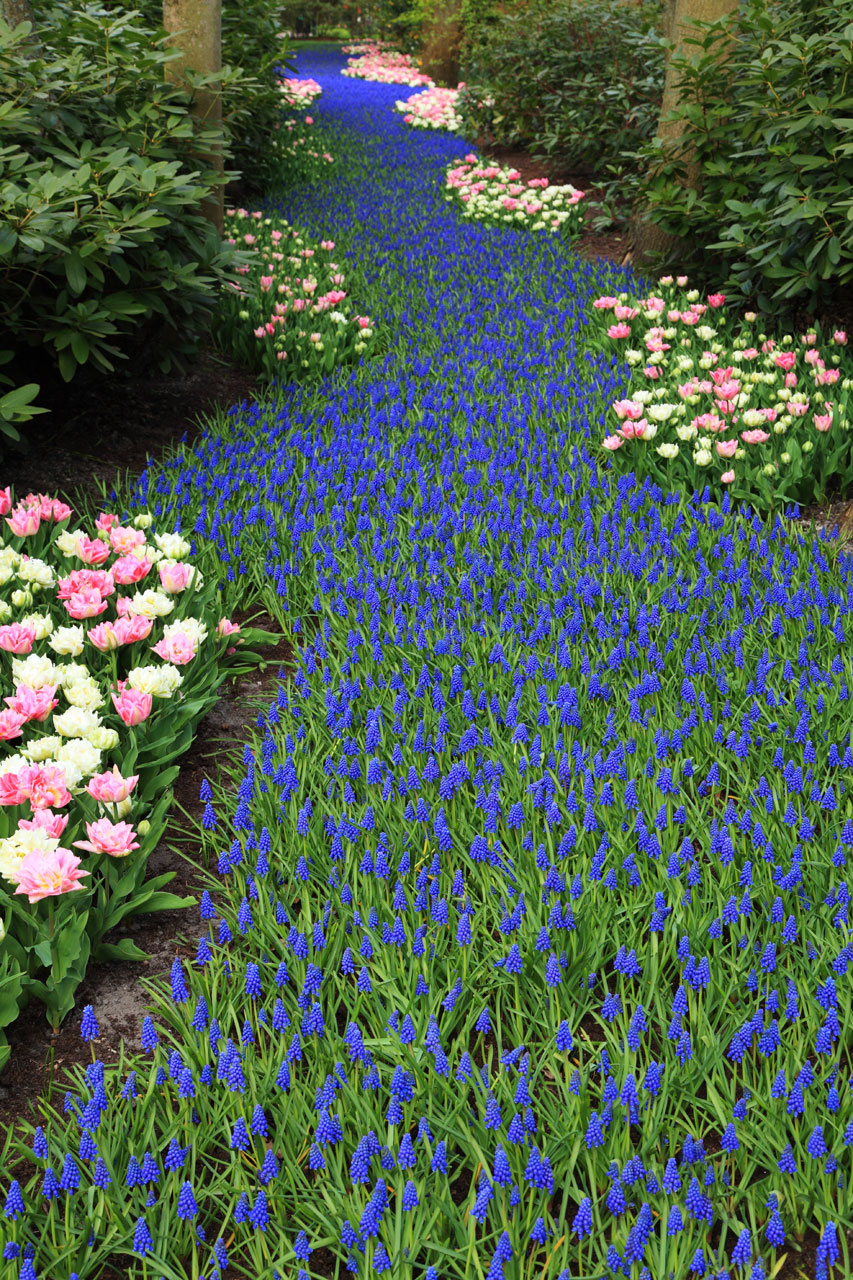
Grape hyacinth flower bed in keukenhof.